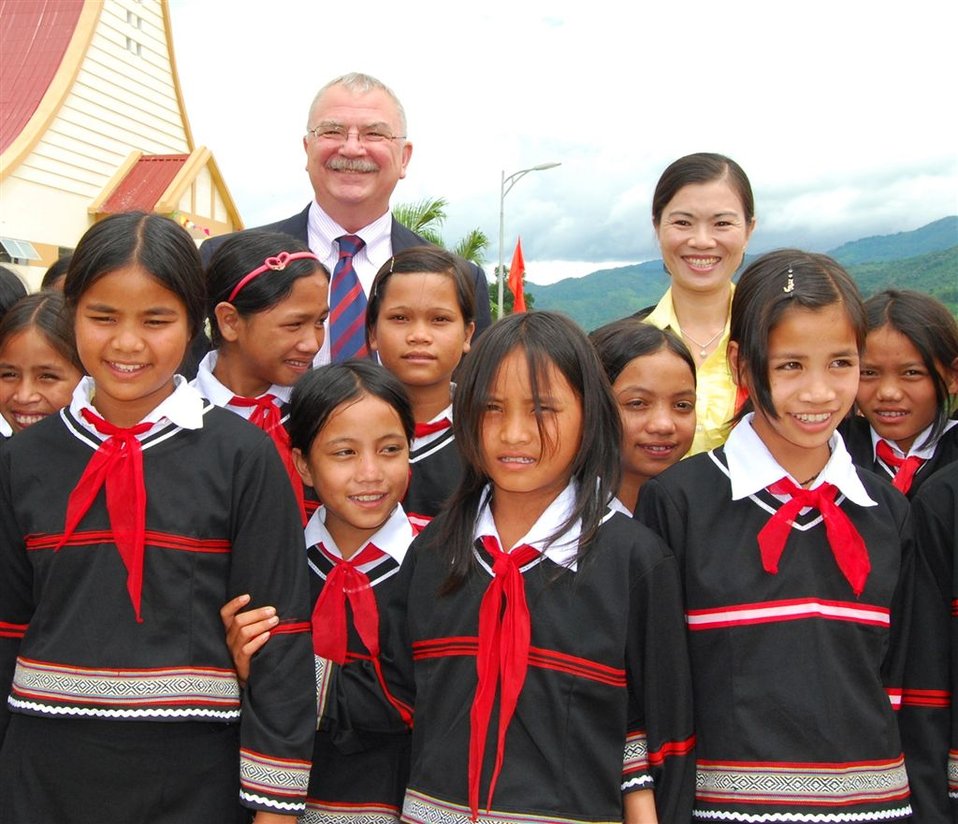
Ambassador Michael Michalak and Truong Thi Ngoc Anh meet with students at the Kon Ray School